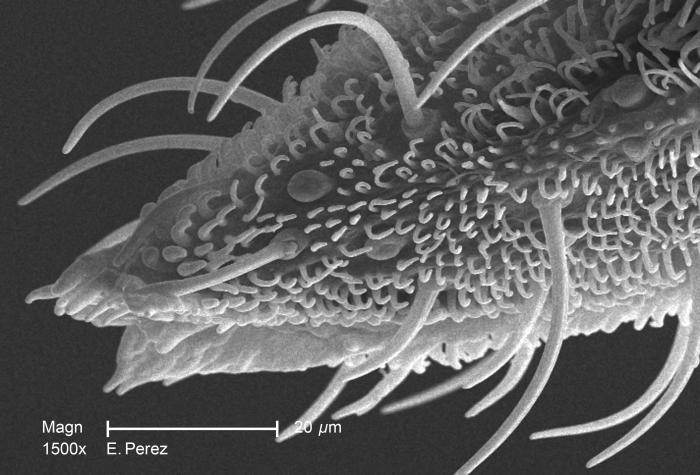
Magnified 1500X, this scanning electron micrograph (SEM) revealed some of the minute exoskeletal details found at the proboscis tip of an unidentified mosquito found deceased in the suburbs of Decatur, Georgia. The proboscis is the organ used by this, as well as other like insects, to feed upon the blood of a warm-blooded host, including human beings. What you see here, is the sheath that encases a pair of needle-sharp "stylets", which together are known as the "fascicle". The larger of the two stylets, known as the "labrum", when viewed in cross-section, takes on the shape of a "V", and acts as a gutter, directing the ingested host blood towards the insect's mouth. The 'hair-like' structures are known as "setae", and are really extensions of the insect's exoskeletal, chitinous covering. These setae act as sensory organs, transmitting impulses indicating changes in the organism's environment.